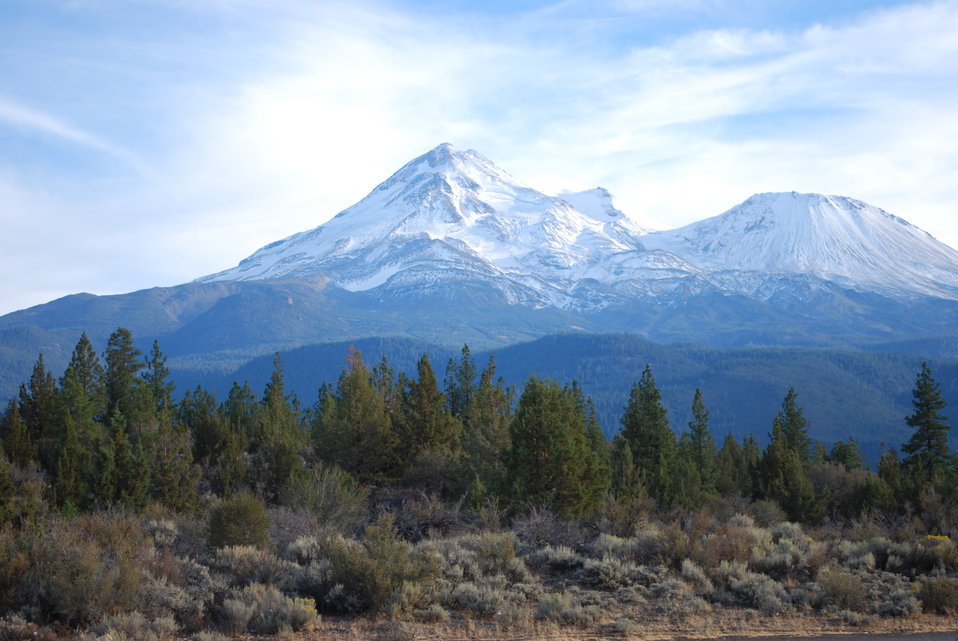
Mount Shasta dominates the landscape in the Shasta Valley of Northern California